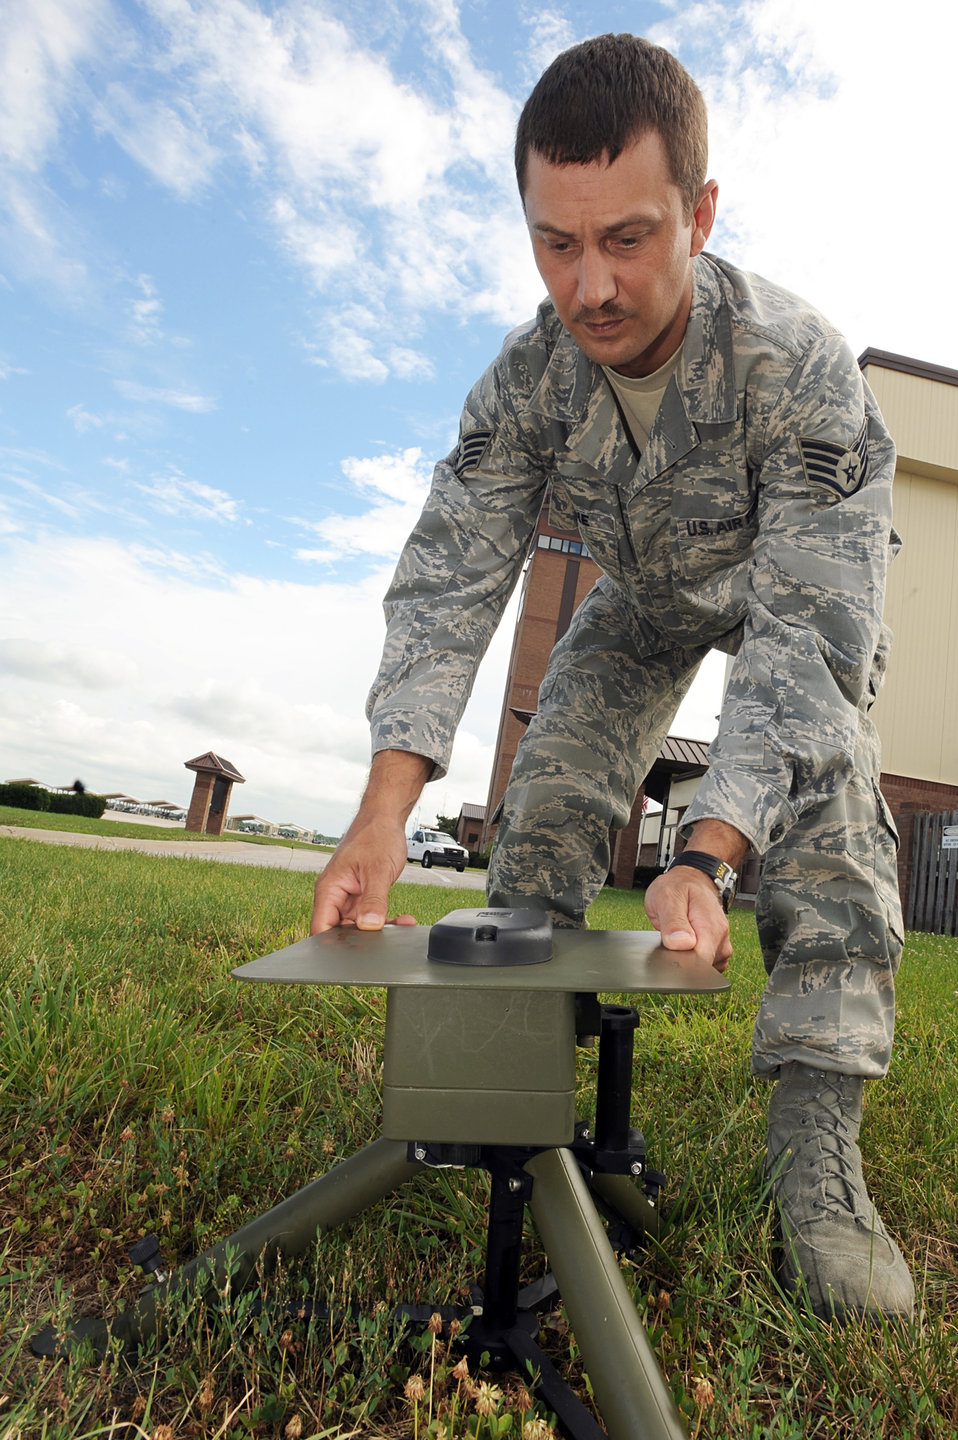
Eyes of the storm

Staff Sgt. Charles Malone readies a surveying instrument as part of the Tactical Meteorological Observing System station, July 6, 2010, at Whiteman Air Force Base, Mo. The TMOS systems can be set up and sending data within 15 minutes. Sergeant Malone is a 509th Operation Support Squadron weather forecaster.